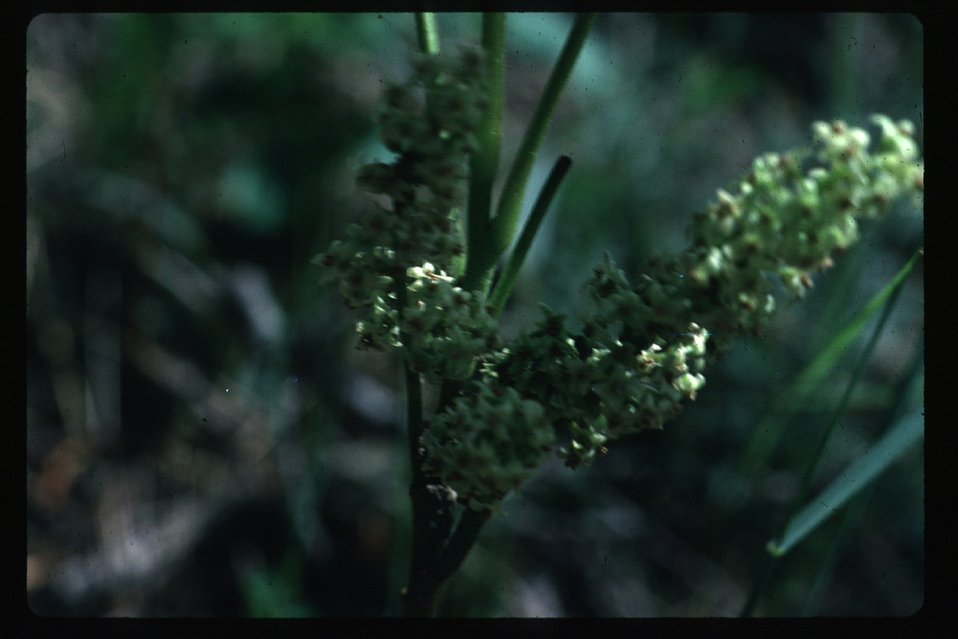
Rhus trilobata flowers Poison Ivy Brush, grasses Wildflowers